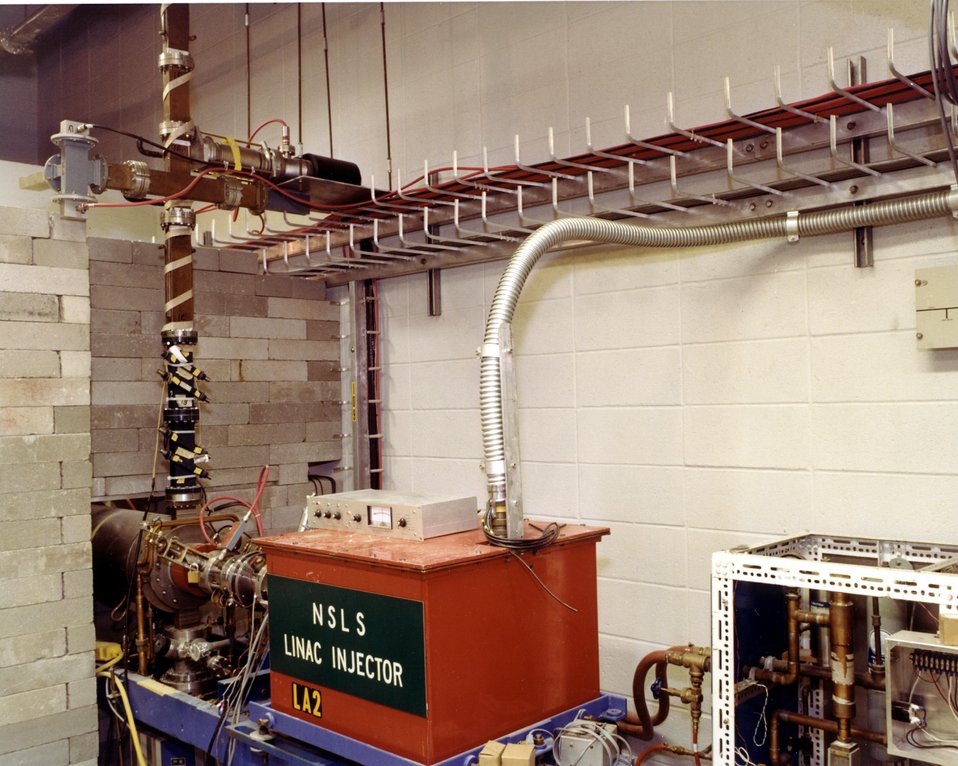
CBA IS A PROTON-PROTON COLLIDING BEAM ACCELERATOR WHICH IS BEING BUILT TO STUDY THE BASIC STRUCTURE OF ENERGY AND MATTER. THE FACILITY ITSELF IS AN UNDERGROUND CIRCULAR TUNNEL, WHICH IS 3.8 KILOMETERS IN CIRCUMFERENCE. TWO RINGS OF SUPERCONDUCTING MAGNETS WILL BE INSIDE THE TUNNEL. PRO- TON BEAMS WILL BE INJECTED INTO THE TUNNEL AND ACCELERATED TO ENERGIES UP TO 400 GEV. AT SIX PLACES ALONG THE TUNNEL, THE BEAMS WILL COLLIDE. EXPERIMENTAL HALLS, WHICH ENCLOSE THESE 6 INTERSECTIONS, WILL HOUSE EQUIPMENT FOR STUDYING THE RESULTS OF THE COLLISIONS.